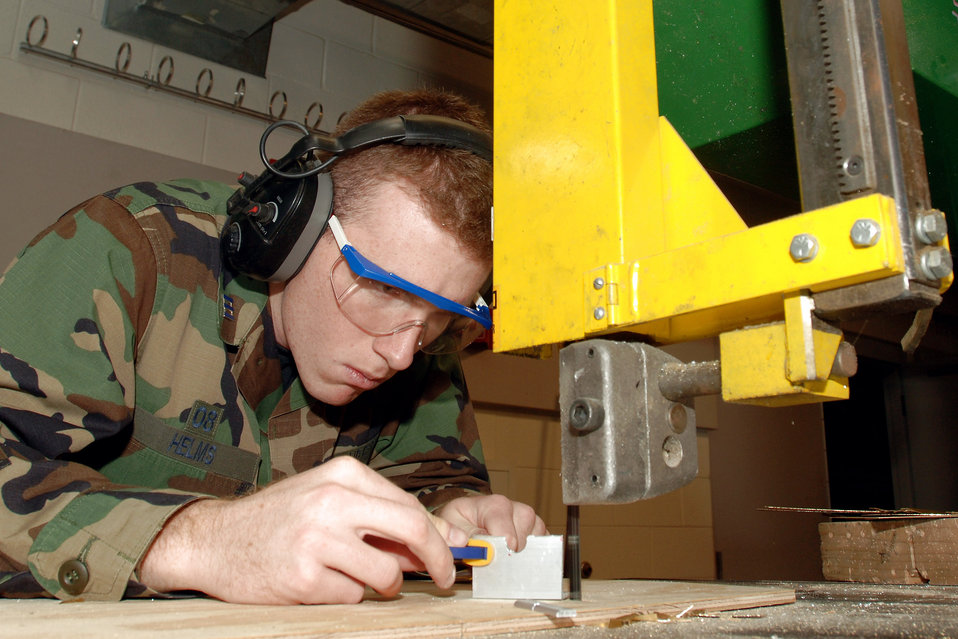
World's first astronautics department celebrates 50 years

Cadet 1st Class Ian Helms fabricates an antenna bracket for FalconSat 5, part of the Department of Astronautics small satellite engineering program. The Department of Astronautics celebrated its 50th Anniversary March 7. Cadet Helms is with Cadet Squadron 22 at the U.S. Air Force Academy, Colo.